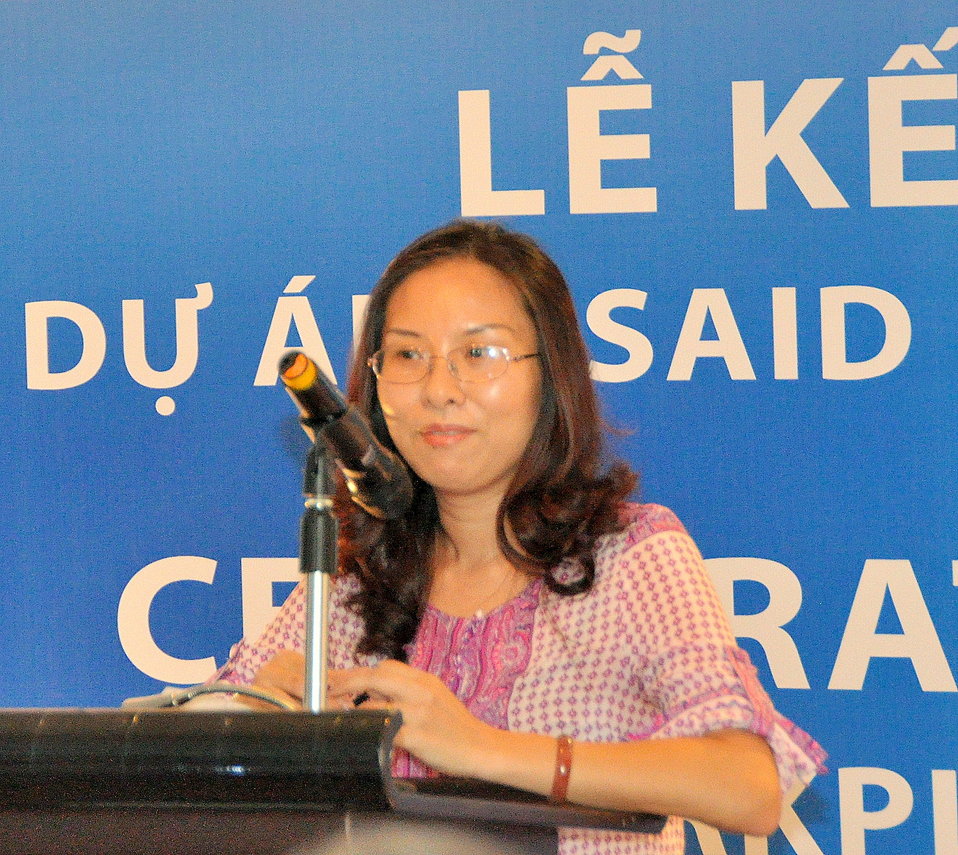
Mrs Mai Thi Dieu Huyen of VCCI's Vietnam Women Entrepreneur Council speaks at the completion event.

Hanoi, June 20, 2013.